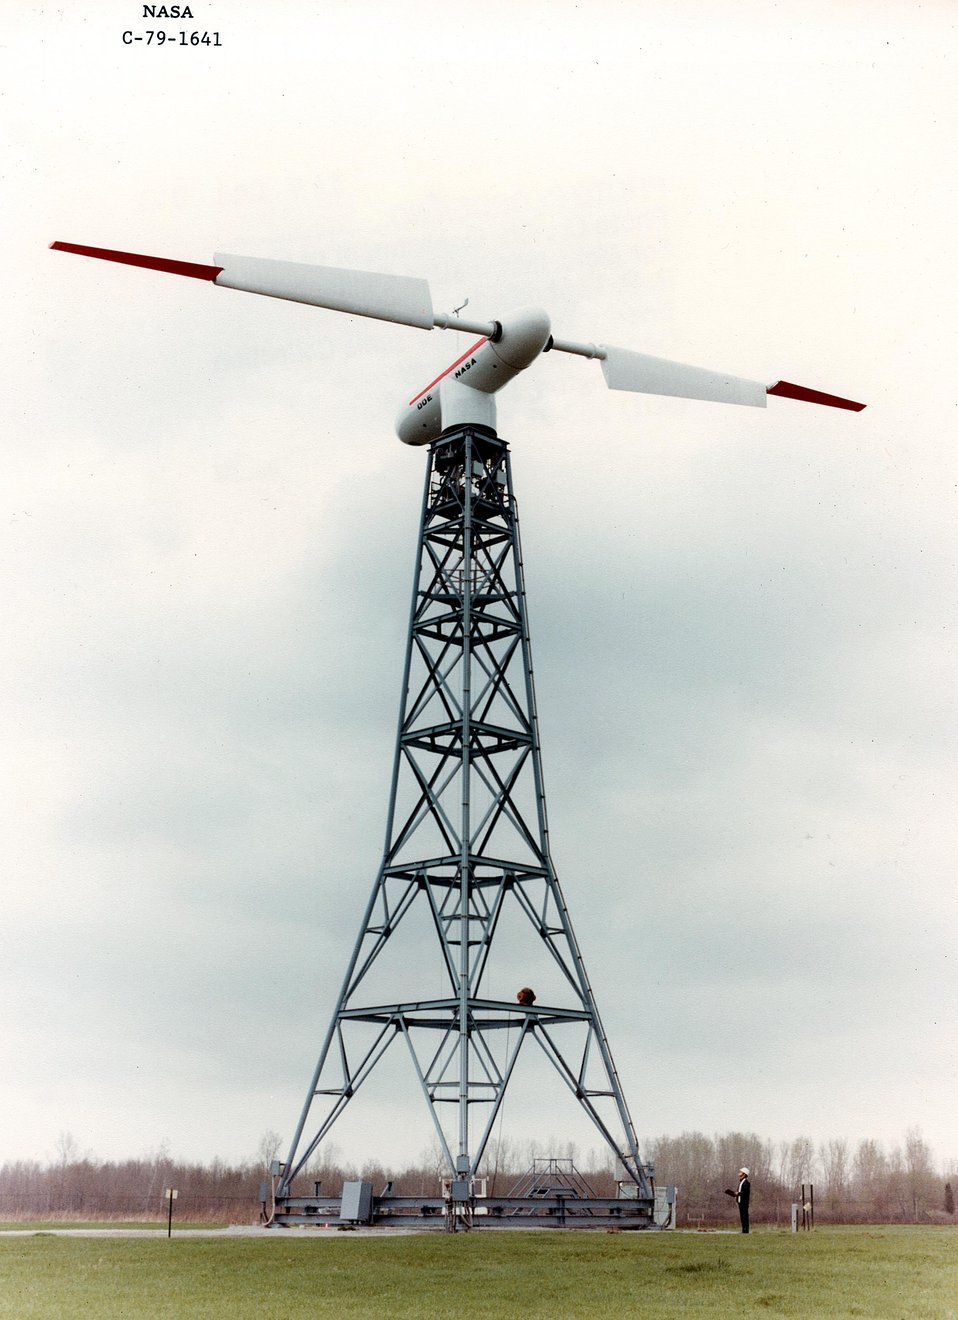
The 100kw MOD 0 Wind Turbine at the NASA Plum Brook Station near Sandusky, Ohio. c. 1979